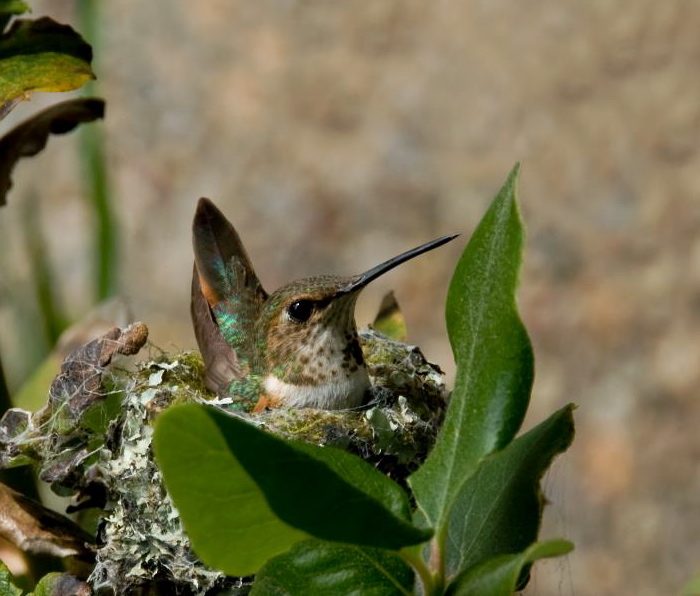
rufous hummingbird

Oregon Coast National Wildlife Refuge Complex, OR